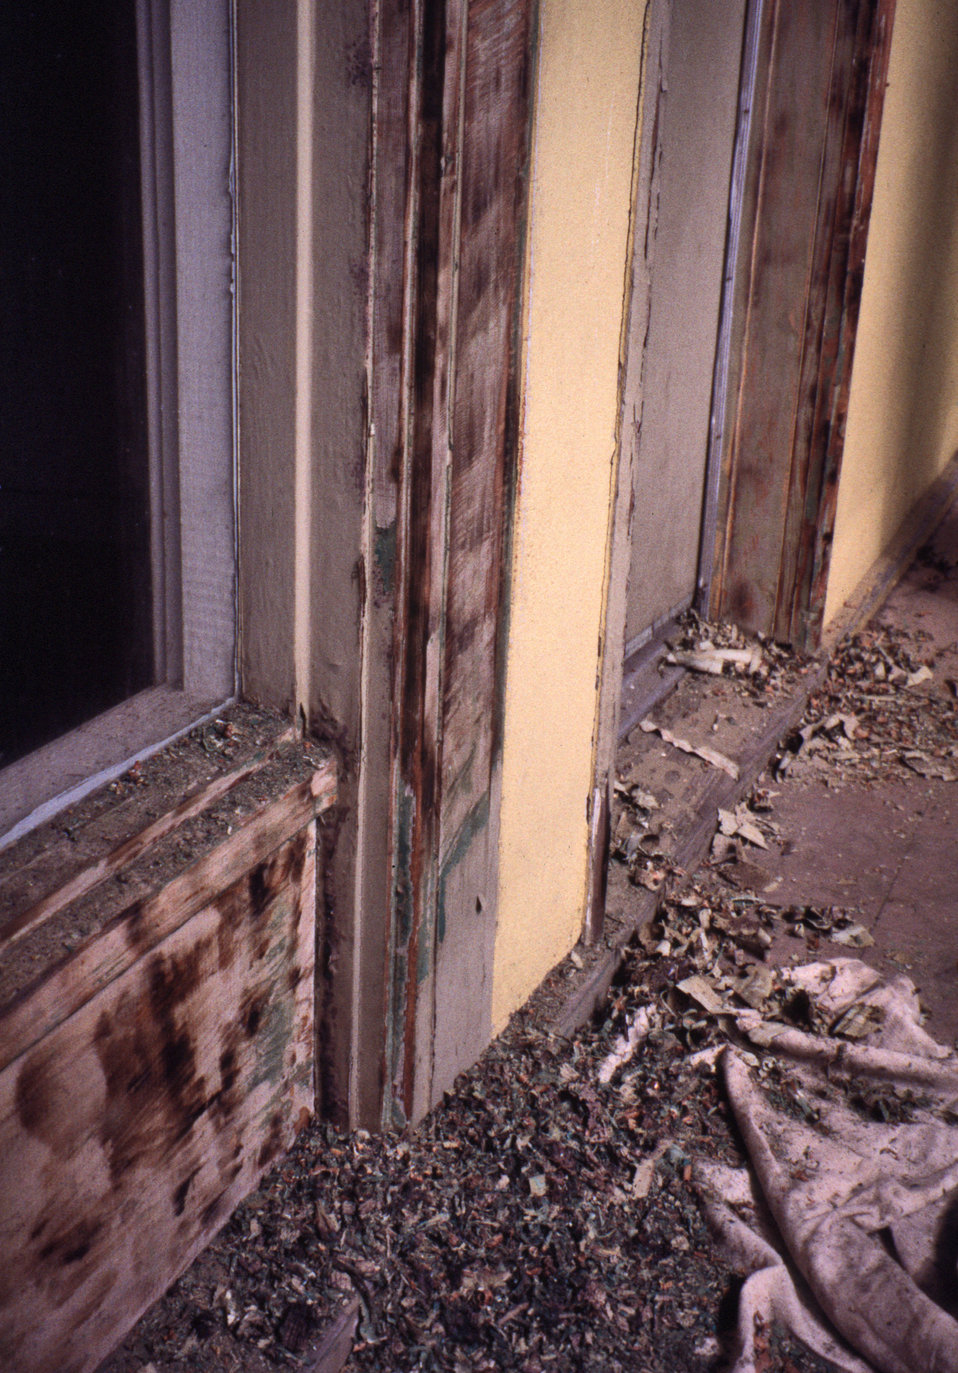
This photograph reveals lead paint scrapings on a floor after having been removed by flame burning, demonstrating the lead contamination that results from an exterior renovation method typically used on residences where lead-based paint was present.